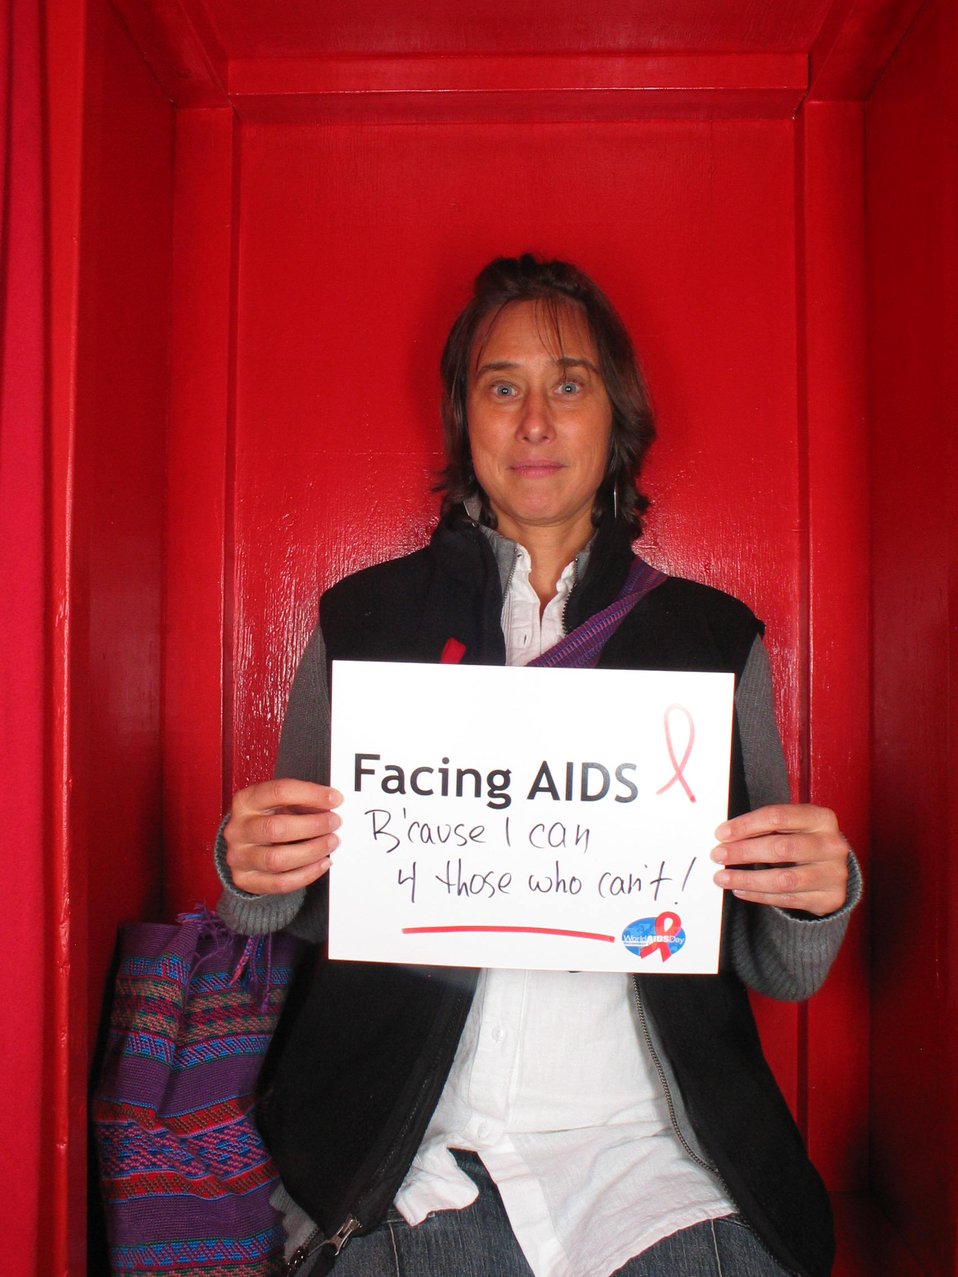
Facing AIDS because I can 4 those who can't.